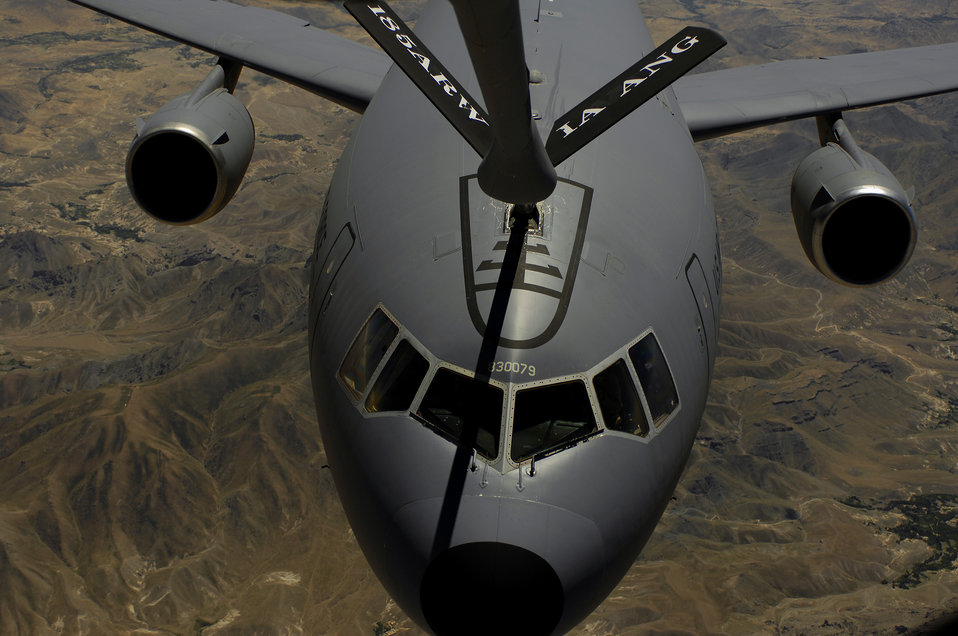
June 13 airpower summary

A KC-10 Extender moves into position to receive fuel from a KC-135 Stratotanker during a mission over Afghanistan. The KC-10 is deployed from McGuire Air Force Base, N.J., and the KC-135 is deployed from the 174th Air Refueling Squadron from Sioux City, Iowa.